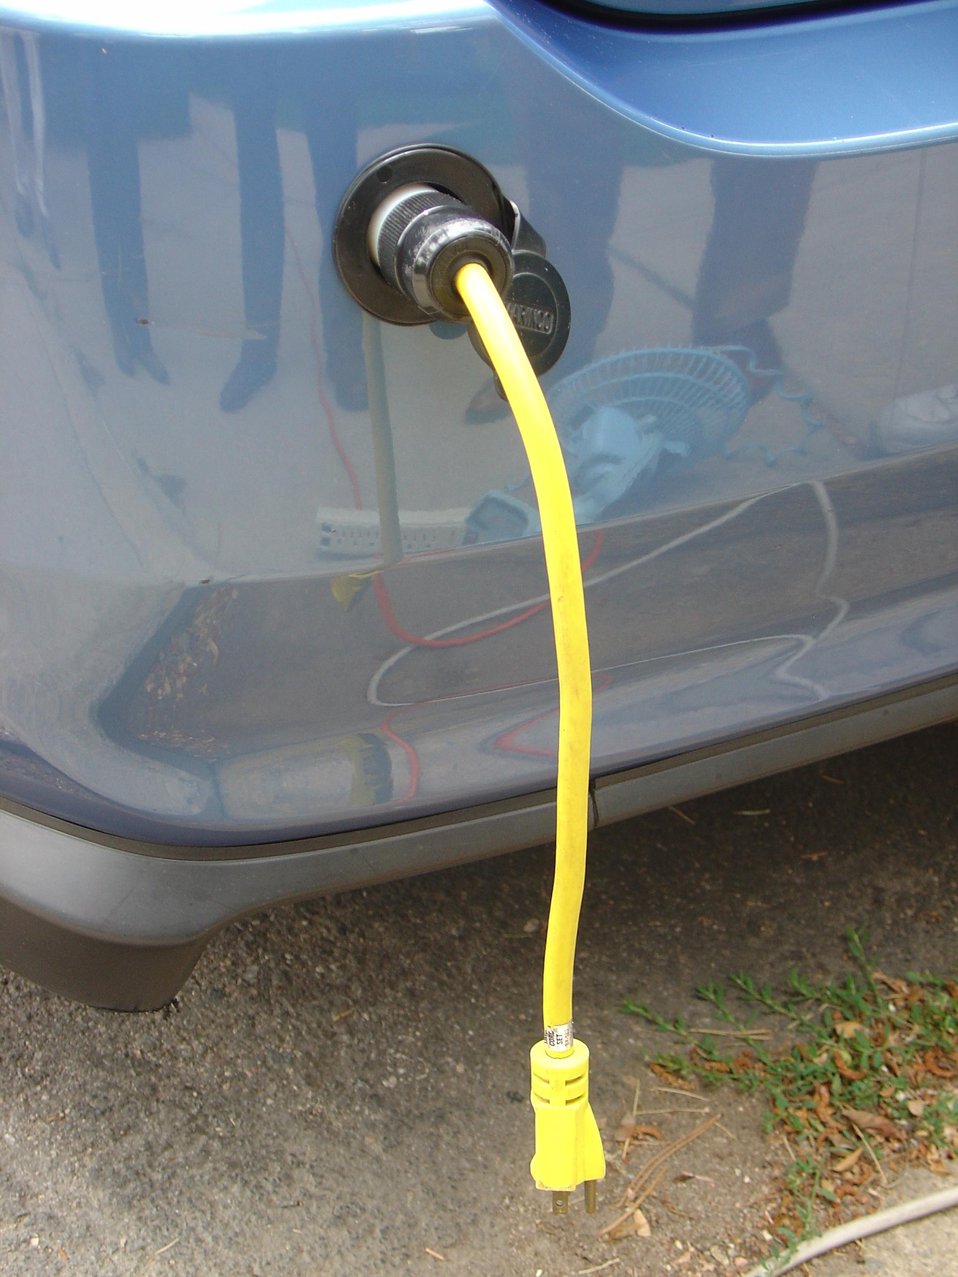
SHOWN IS THE PLUG OF A TOYOTA PRIUS THAT HAS BEEN CONVERTED INTO A PLUG-IN HYBRID ELECTRIC VEHICLE (PHEV) BY ENERGY CS.

AS PART OF THE ADVANCED VEHICLE SYSTEMS PROJECT AT NREL, ENERGY CS CONVERTED THIS TOYOTA PRIUS INTO A PLUG-IN HYBRID ELECTRIC VEHICLE (PHEV). THE PHEV HAVE A LARGER BATTERY PACK THEN STANDARD HYBRID ELECTRIC VEHICLES. THIS ALLOWS PLUG-IN HYBRIDS TO OPERATE GENERALLY ON ELECTRICITY FOR SHORT TRIPS. FOR LONGER TRIPS, A PLUG-IN HYBRID DRAWS FUEL FROM ITS ONBOARD TANK, WHICH PROVIDES COMPARABLE DRIVING RANGE AND PERFORMANCE TO A CONVENTIONAL PETROLEUM-FUELD VEHICLE. IT IS AN ELECTRIC BATTERY THAT CAN BE CHARGED BY PLUGGING ITS CORD INTO A STANDARD 110-VOLT OUTLET. A COMPUTER INSIDE THE VEHICLE DETERMINES WHEN IT'S MOST EFFICIENT FOR THE VEHICLE TO BE FUELED BY ELECTRICITY AND BY THE LIQUID FUEL (NOT NECCESSARILY PETROLEUM; MAY USE BIOFUELS).